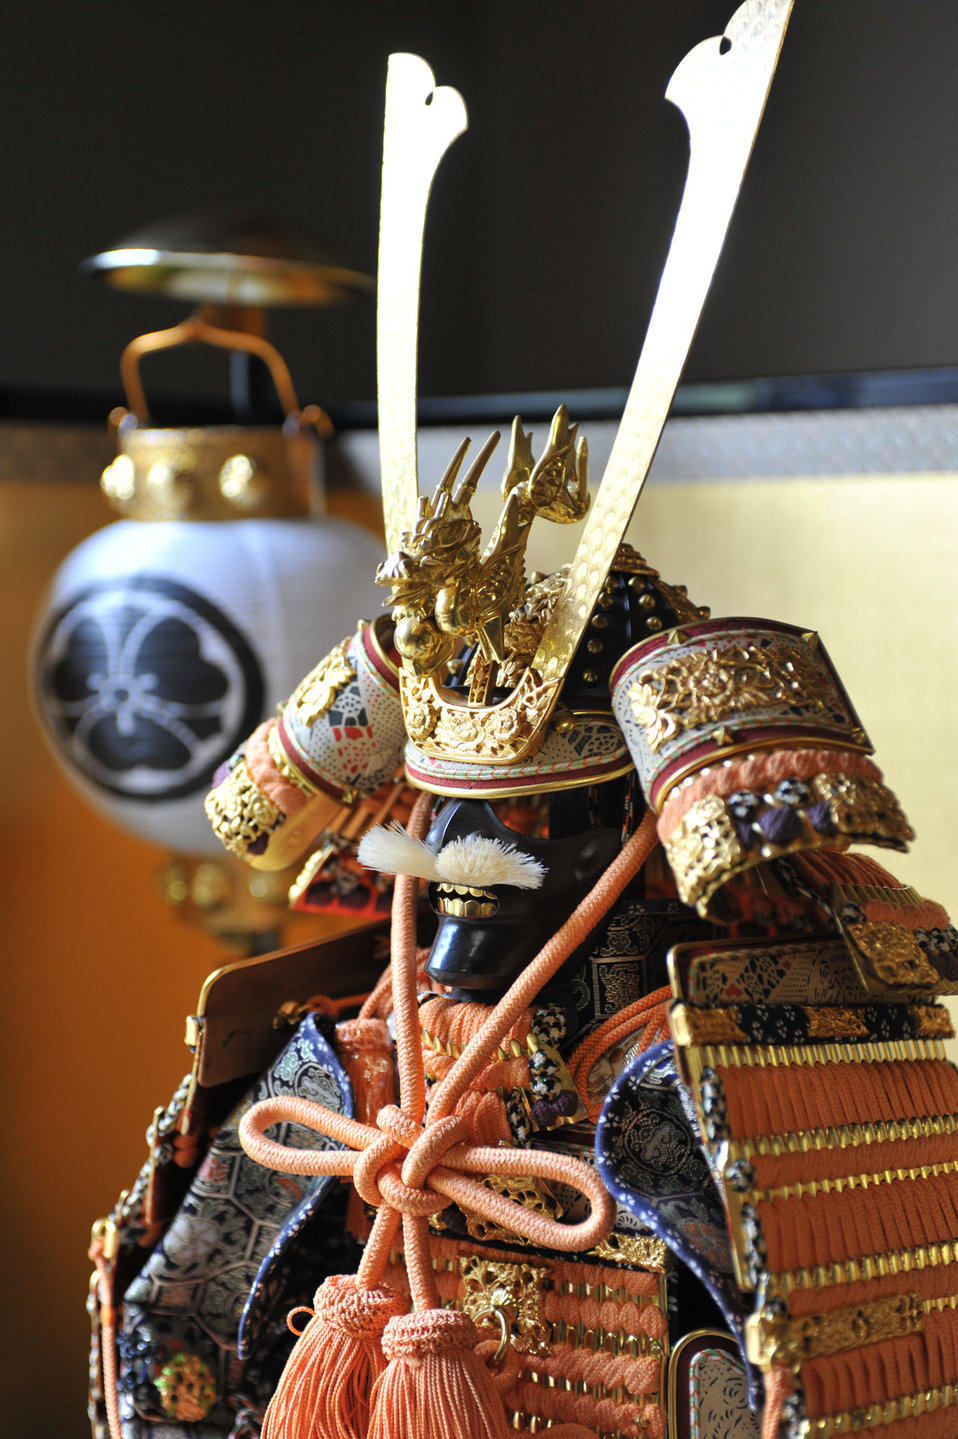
Japanese traditional full armor 4

Japanese traditional full armor.